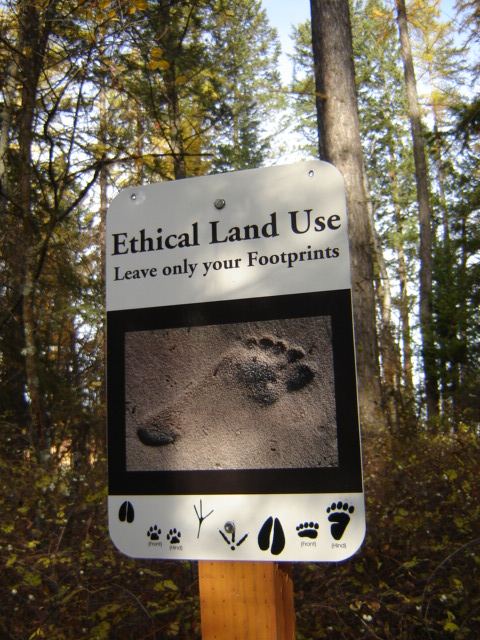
Creston National Fish Hatchery's Nature Trail has thirteen signs along the trail that correspond to a brochure at the trailheads.

For Flathead Valley educators and families, this nature trail helps to increase knowledge of the natural world around us. Informational signs include: Wildflowers not Weeds, Why do Hacheries Raise Fish, Deer Trails - Natures's Highways, Habitats-Aquatic-Forest-Riparian, Protecting Water Quality, Pollinators, Birds - Can you Hear Them Sing?, Historical Land - Jessup, Leave no Trace, Do Insects Bug You?, and the Class Room by the Creek (amphitheater).